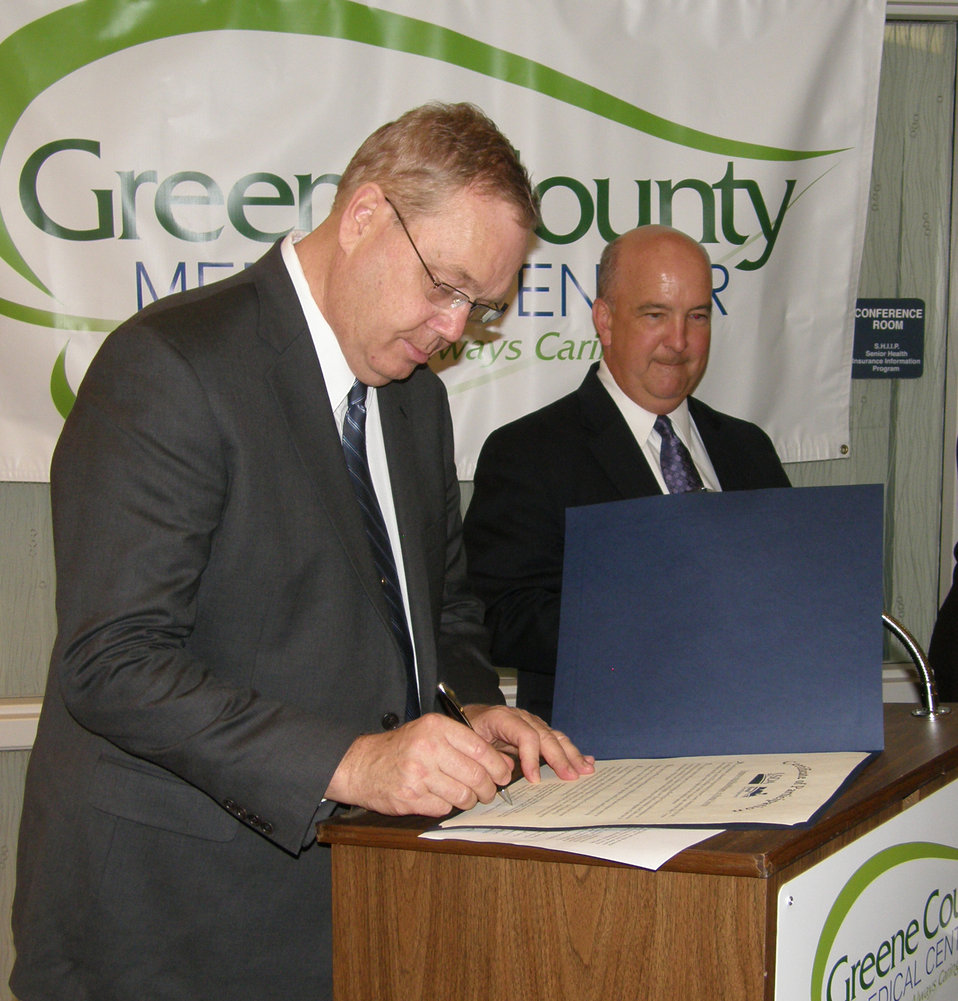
U.S. Department Agriculture (USDA) Under Secretary for Rural Development Dallas Tonsager announced that Greene County Medical Center (GCMC) in Iowa will receive $20 million in loans to expand and renovate a 75-year-old medical facility and create a state-of-the-art medical campus. The Under Secretary made the announcement while visiting the hospital on Monday, May 14, 2012.